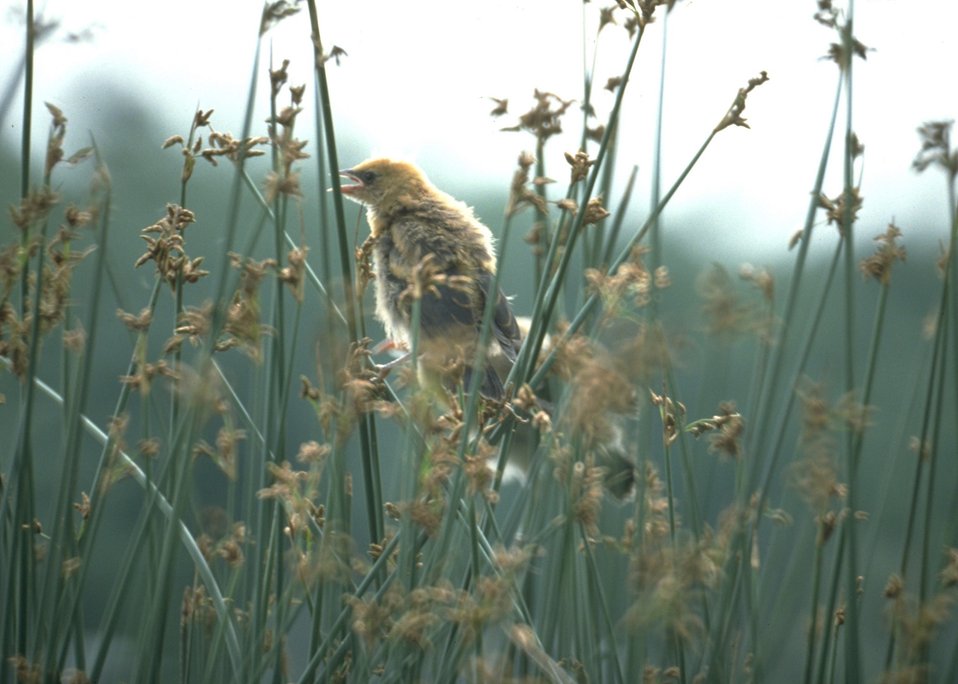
Juvenile yellow headed black bird.